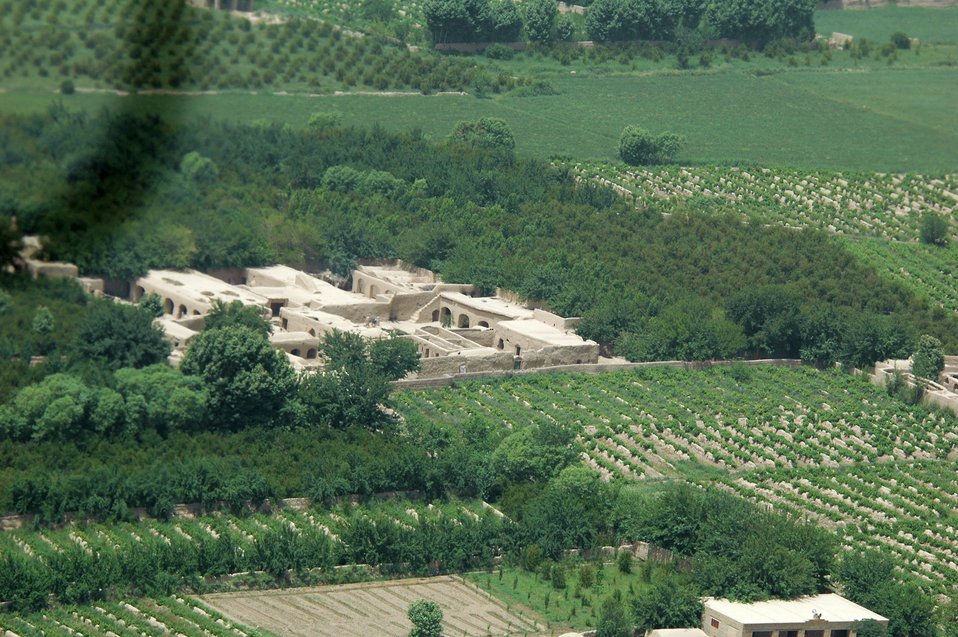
CODEL Berman